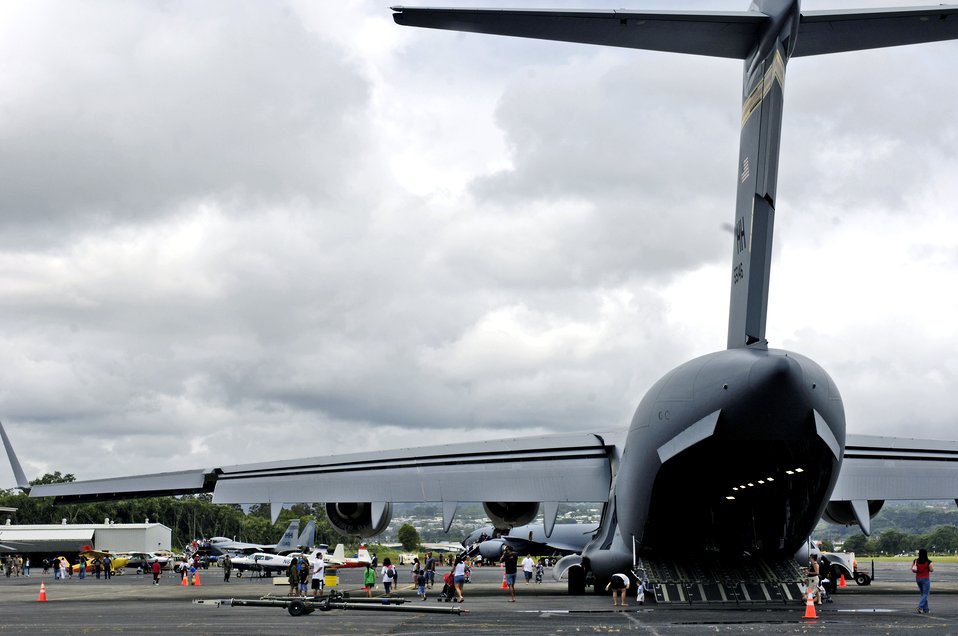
Hawaii Air National Guard hosts open house

A C-17 Globemaster III was one of several aircraft visitors had the opportunity to see on Saturday, May 20, 2006 during an Armed Forces Day air show at Hilo International Airport, Hawaii. The Hawaii Air National Guard hosted the show to give the public a chance to view various aircraft stationed in Hawaii and to generate public interest in the military.